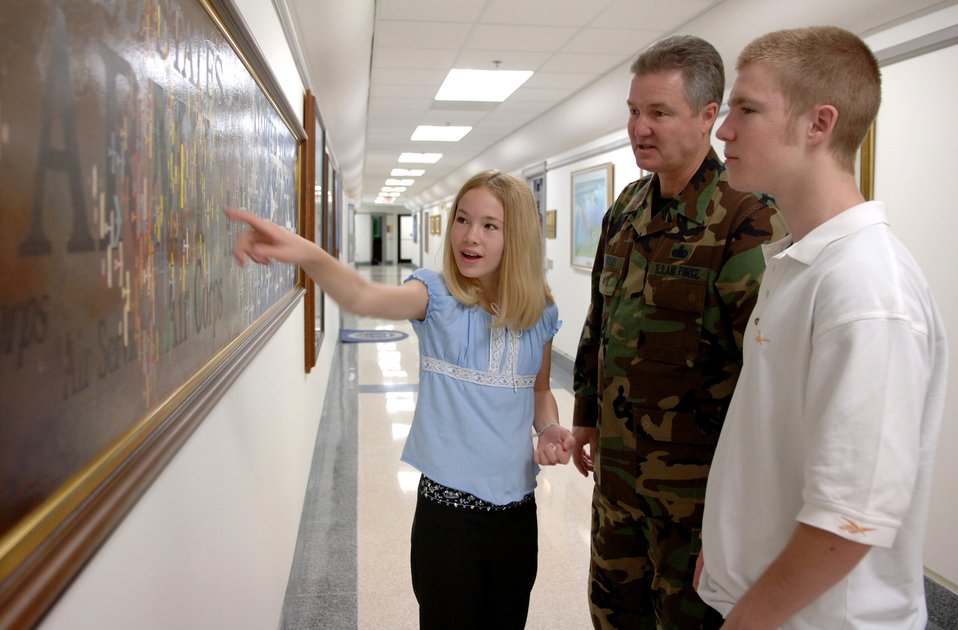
CMSAF Murray enjoys day at work with his children

Elizabeth Murray, 10, points out an item on the airpower timeline to her father, Chief Master Sgt. of the Air Force Gerald R. Murray, and her brother Stephen, 17, on Thursday, April 27, 2006. Chief Murray brought Elizabeth and Stephen to the Pentagon for the National Take Our Daughters and Sons to Work Day.